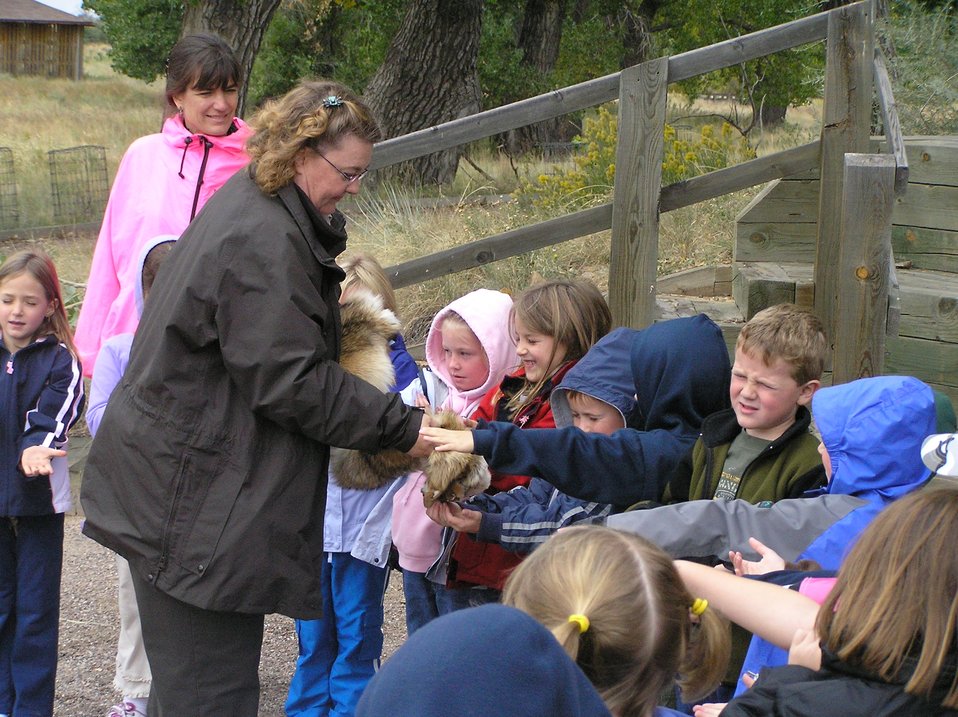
Outdoor Sensations program at the Rocky Mountain Arsenal in Colorado is where kids learn about seeing, smelling, hearing and touching (not tasting) wildlife. Here the students get the opportunity to learn about coyotes!